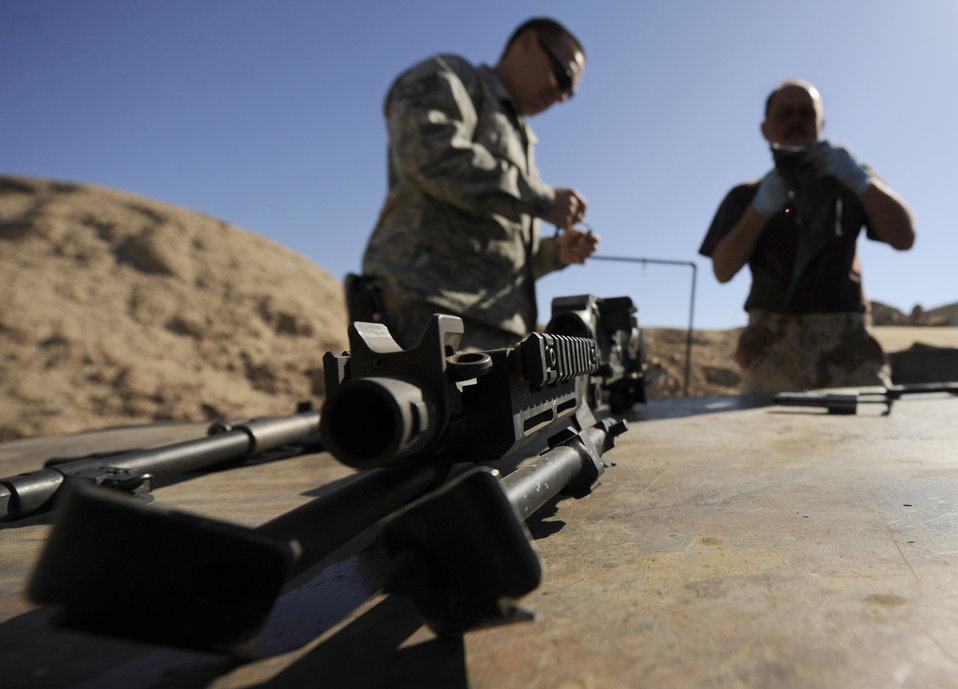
Air advisers aid weapons delivery

Tech. Sgt. Bryan Felix trains Iraqi army aviation command soldiers to clean M240 machine guns March 17, 2011, at Camp Taji, Iraq. Sergeant Felix is a 721st Air Expeditionary Advisory Squadron weapons adviser.